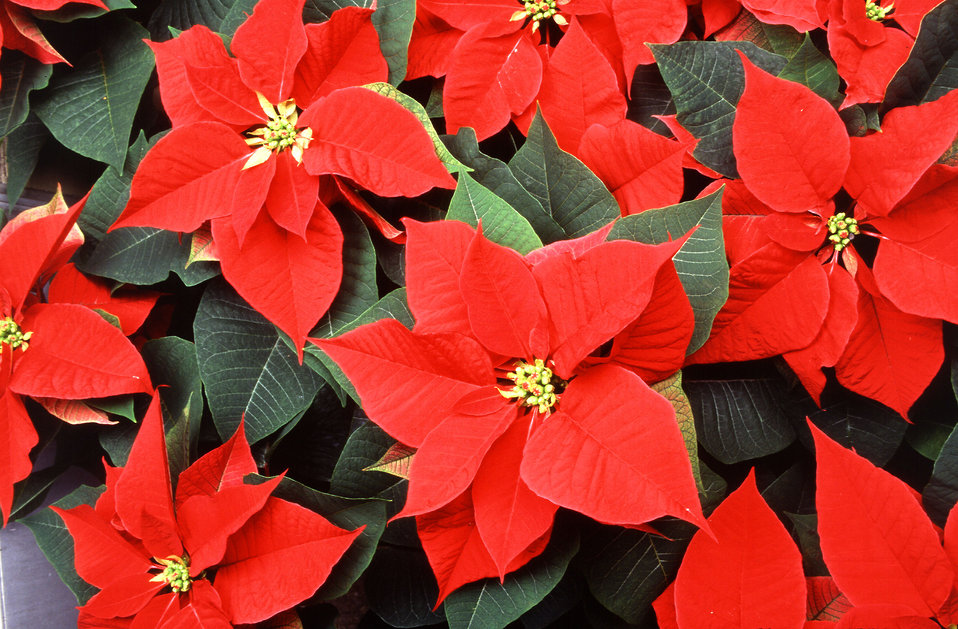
The poinsettia is the most popular Christmas plant and it is the number-one flowering potted plant in the U.S., even though its’ traditional sales period is just 6 weeks. In 1976, the U.S. Department of Agriculture (USDA) Agricultural Research Service (ARS) began research to improve the flower's dependability. USDA ARS discovered the exact conditions of light and temperature the plant requires and devised precision growing methods that enabled massive cultivation. The poinsettia, a contemporary symbol of Christmas, was introduced to the U.S. from Mexico and named after Joel Robert Poinsett in 1825. The Aztec Indians prized poinsettias and considered them a symbol of purity because of their brilliant red color. They made a reddish-purple dye from the colored 'flowers', which are actually modified leaves called bracts. They also made a medicine against fevers from the latex sap of the plant.